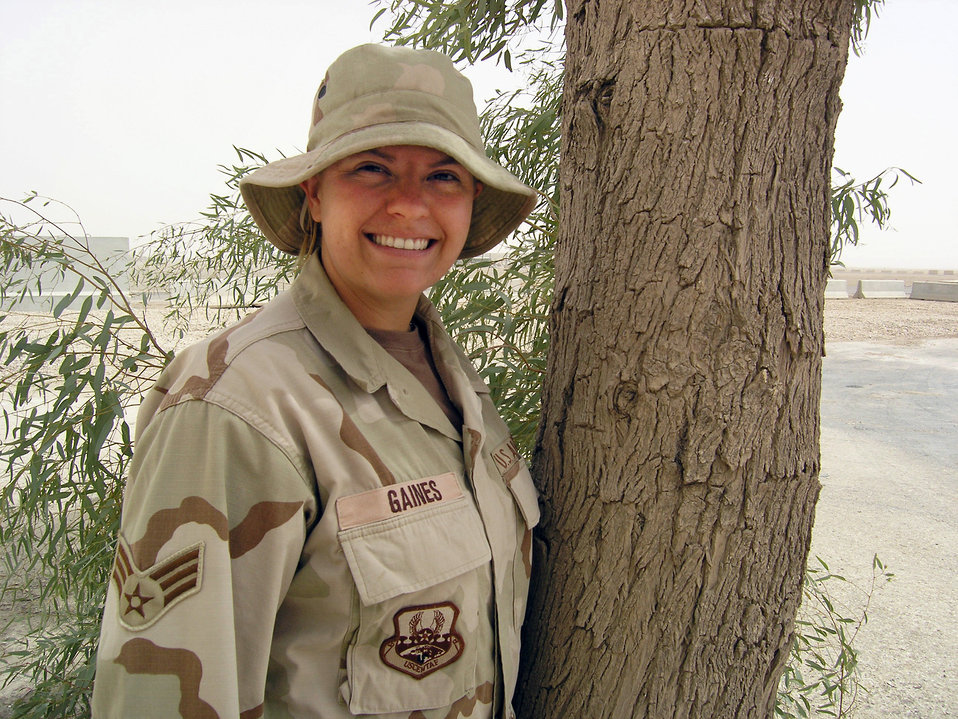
Airmen serve in Iraq to honor 9/11 victims

ALI BASE, Iraq -- Senior Airman Kara Gaines recently finished a tour of duty here with the 407th Expeditionary Communications Squadron. Serving here was a way for her to take back power over terrorists who killed two children she mentored as a camp director, when they flew on the plane that hit the Pentagon. Airman Gaines is stationed at Lackland Air Force Base, Texas, and joined the military because of the events of Sept. 11, 2001.